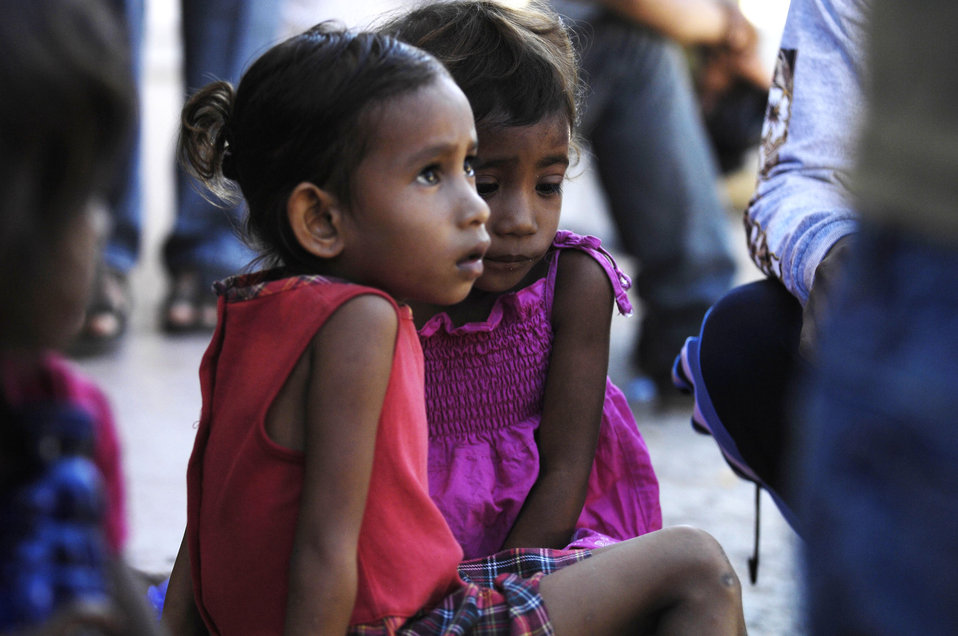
Airmen help hundreds in Timor Leste

Two East Timorese girls wait to be seen by a U.S. Air Force family care physician while at a clinic July 16 in Dili, Timor Leste. More than 300 people were seen on the first of four days at the clinic. East Timorese and U.S. officials set up the clinic as part of Operation Pacific Angel 2009, a Pacific Air Forces humanitarian assistance operation led by 13th Air Force at Hickam Air Force Base, Hawaii.